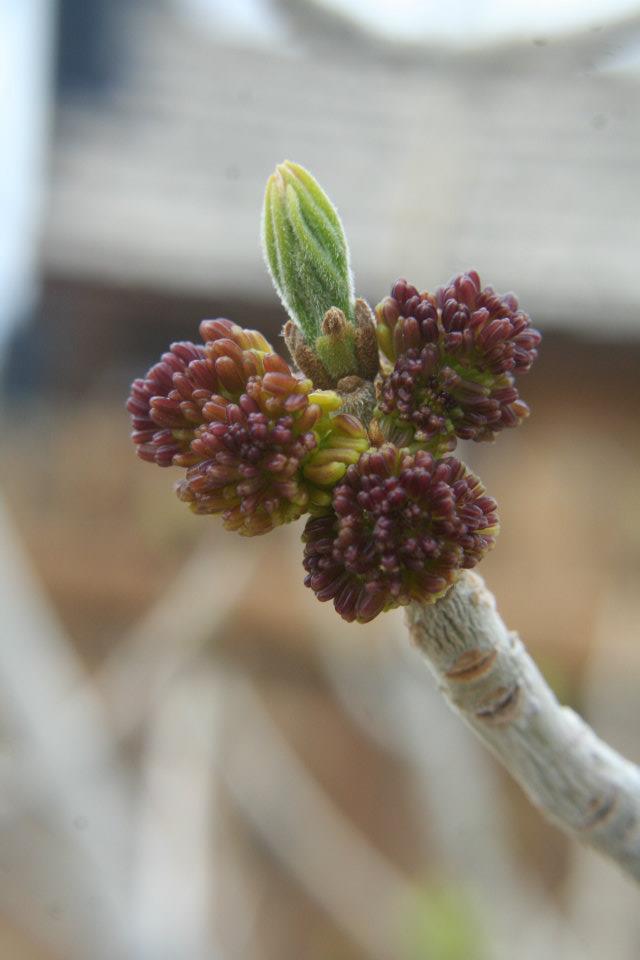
Ash Tree Buds

Ash Meadows NWR, Nevada
March 2012
USFWS

New leaves are showing themselves on the Ash trees!